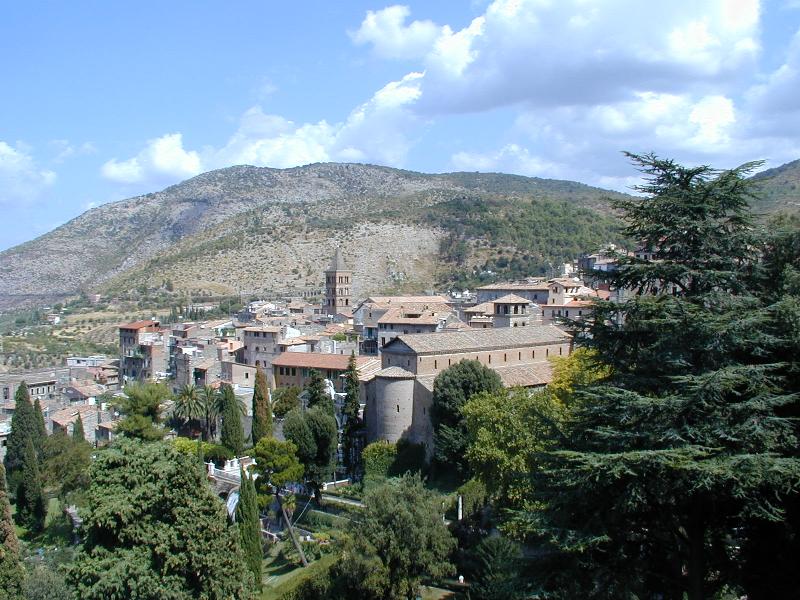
01 000910 tivoli v d este 02 carita